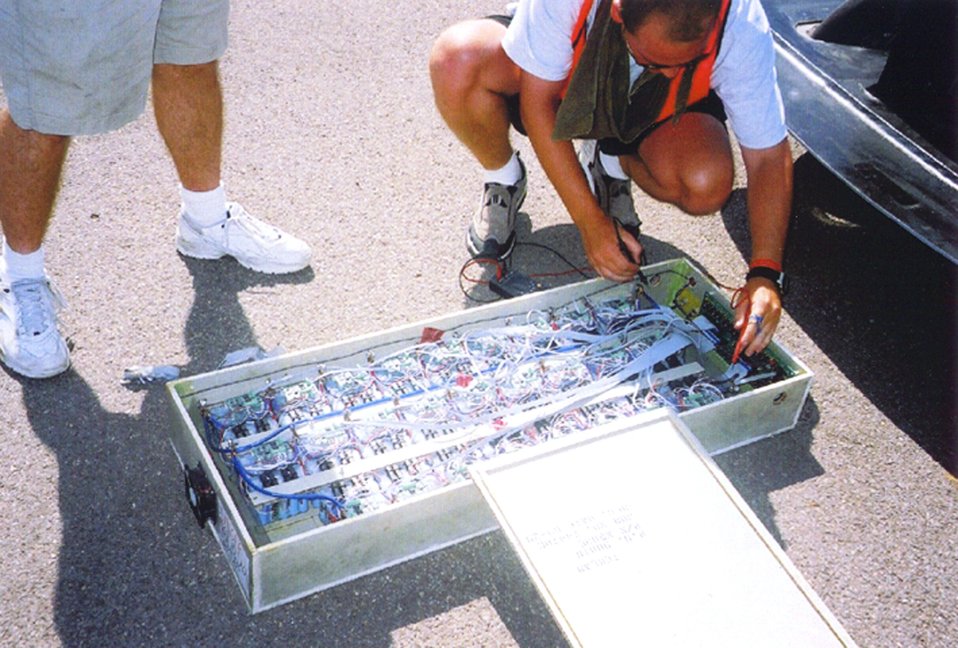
TEAM MEMBERS INSPECTING A LITHIUM BATTERY PACK.

THE AMERICAN SOLAR CHALLENGE (SUNRAYCE) 2001, THE LONGEST SOLAR CAR RACE IN THE WORLD, IS A BIENNIAL EDUCATIONAL SPORTING EVENT IN WHICH UNIVERSITY TEAMS, COMPANIES, AND CLUBS FROM AROUND THE WORLD COMPETE TO BUILD AND RACE SOLAR POWERED CARS ACROSS THE UNITED STATES. THIS YEAR THE RACE BEGAN IN CHICAGO, ILLINOIS ON JULY 15, 2001 AND WAS COMPLETED ON JULY 25, 2001 IN CLAREMONT, CALIFORNIA, TRAVELING ALL ALONG OLD ROUTE 66.